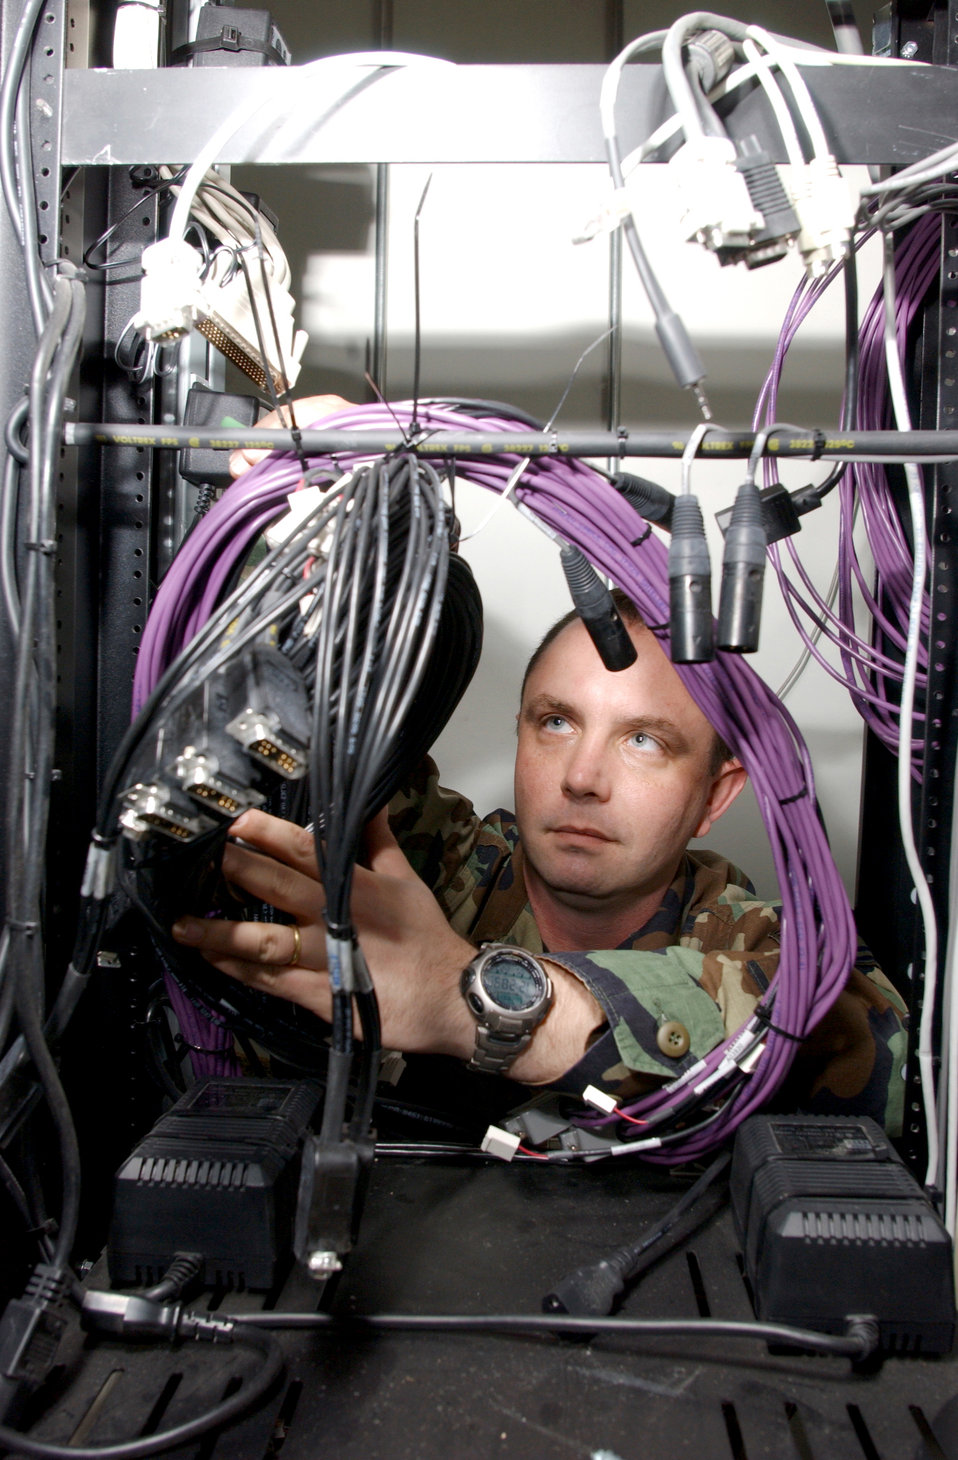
Through the wire

INCIRLIK AIR BASE, Turkey -- Tech. Sgt. Jeff Hood replaces some multicore wires and audio wires on a broken audio vault here Feb. 23. Sergeant Hood is an Air Force News Agency - operating location alpha engineering manager.